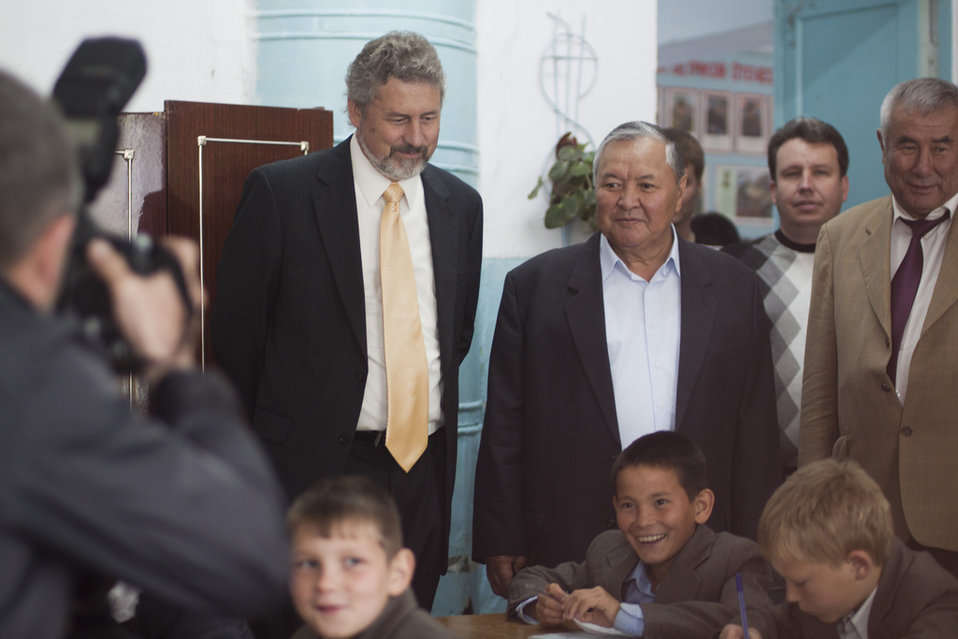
Charge d'Affaires Memmott Presents U.S. Grants To Support Kyrgyz Republic Orphanage

Larry Memmott, Chargé d'Affaires of the U.S. Embassy in Bishkek, Kyrgyzstan, presents two grants from the U.S. Government to support the rehabilitation of the Krasnaya Rechka orphanage in Kyrgyzstan, on April 28, 2011.